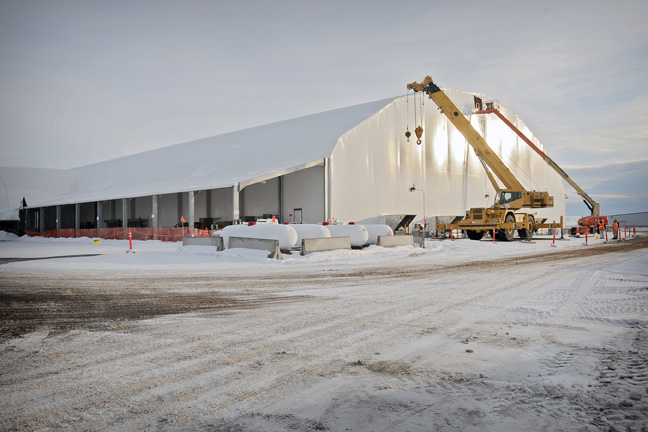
Recovery Act funds buried waste exhumation at Idaho Site’s Pit 9

The Pit 9 retrieval enclosure is designed to withstand sunlight, snow and wind and maintain a negative pressure to contain airborne contaminants.